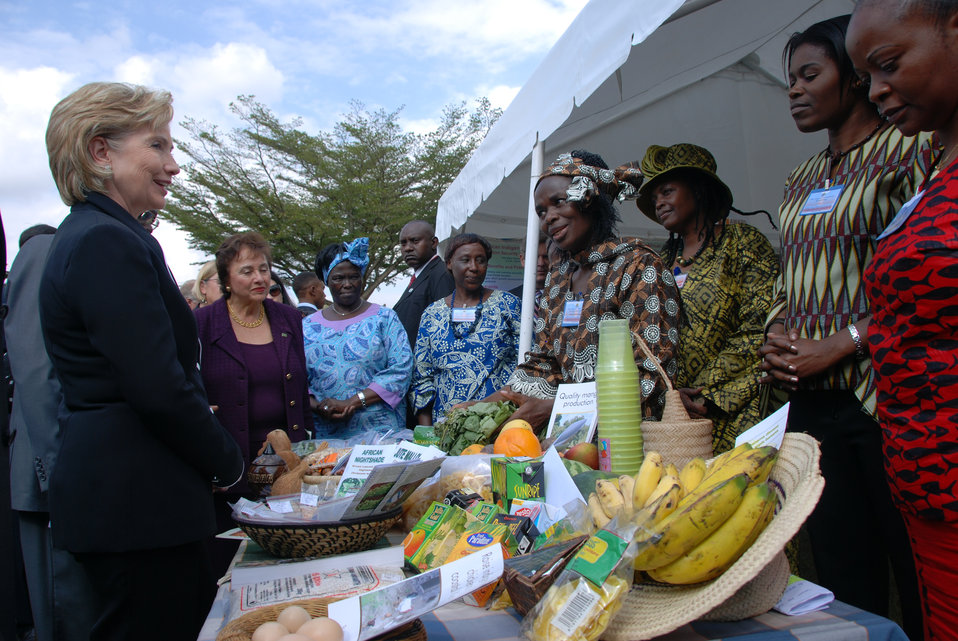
Secretary Clinton Visits Kenyan Agricultural Research Institute

U.S. Secretary of State Hillary Rodham Clinton with women from AWARD (African Women in Agricultural Research and Development) during a tour of the Kenyan Agricultural Research Institute (KARI) near Nairobi, Kenya August 5, 2009.